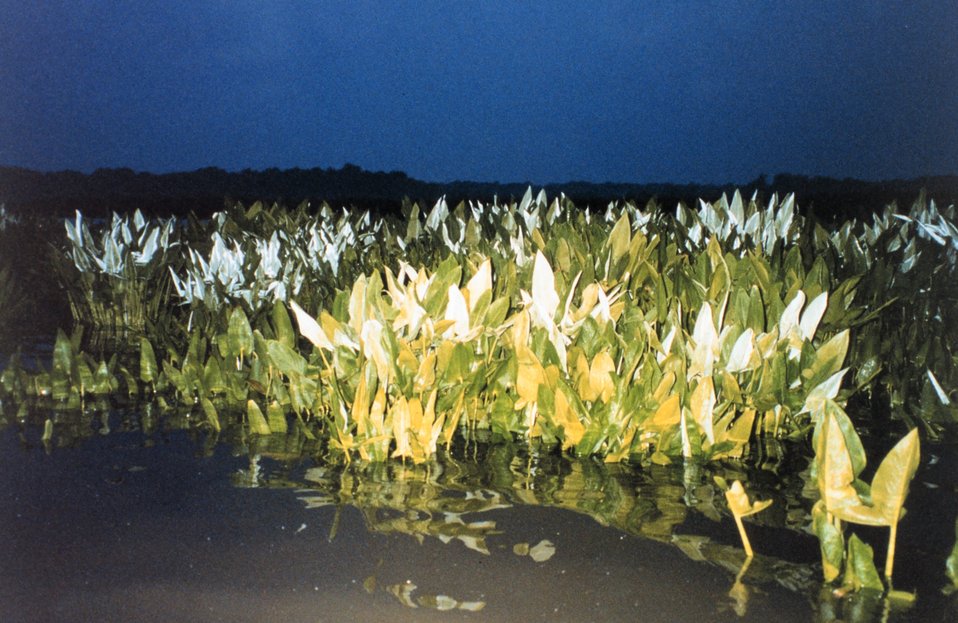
Arrow arum plants at night.